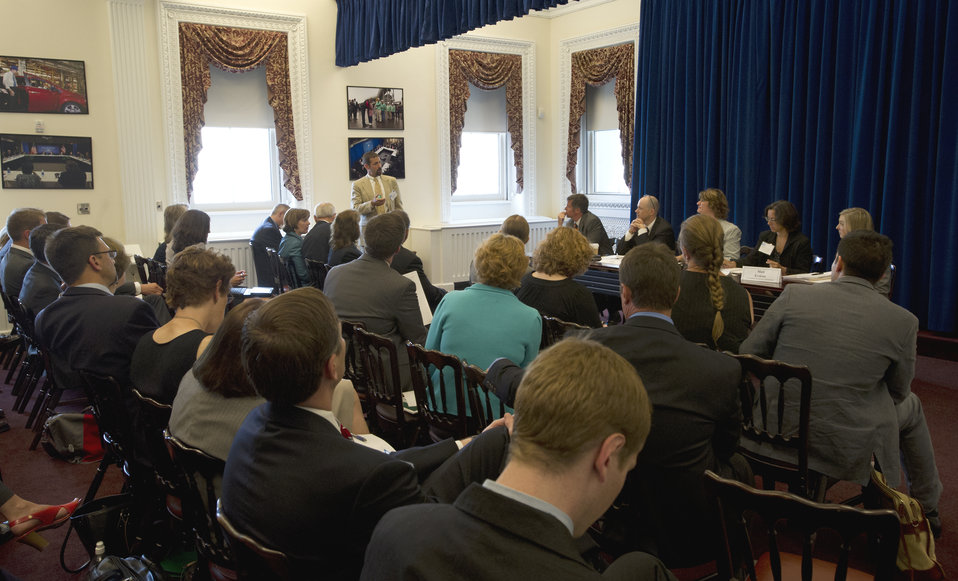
A member of the audience directs a question to the panel (left to right) Doug McKalip, Senior Policy Advisor for Rural Affairs, U.S. Department of Agriculture (USDA), Doug O'Brien, Deputy Undersecretary for Rural Development, USDA, Maria Zimmerman, Deputy Director of the Office of Sustainable Housing and Communities, U.S. Department of Housing and Urban Development (HUD) and Shelly Poticha, Director of Office of Sustainable Housing and Communities, HUD at the White House Forum on Regional Innovation in Rural America at the Eisenhower Executive Office Building, in Washington D.C., on Wednesday, June 13, 2012.